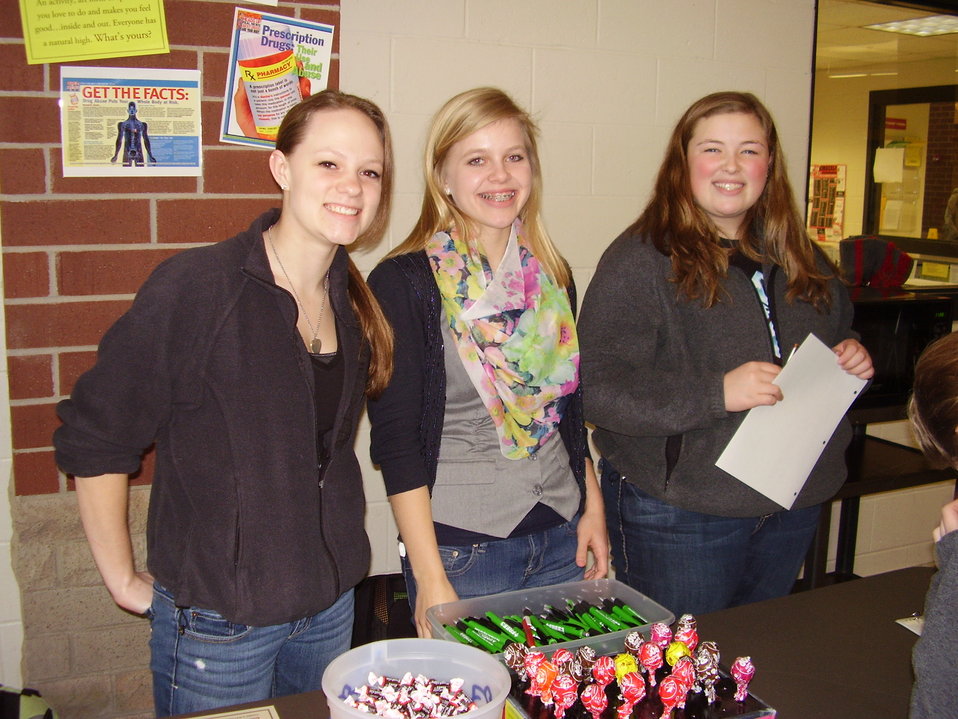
Wisconsin Teens and NDFW 2013

Combined Locks, Wis., Local teens participate in NDFW 2013 Events.